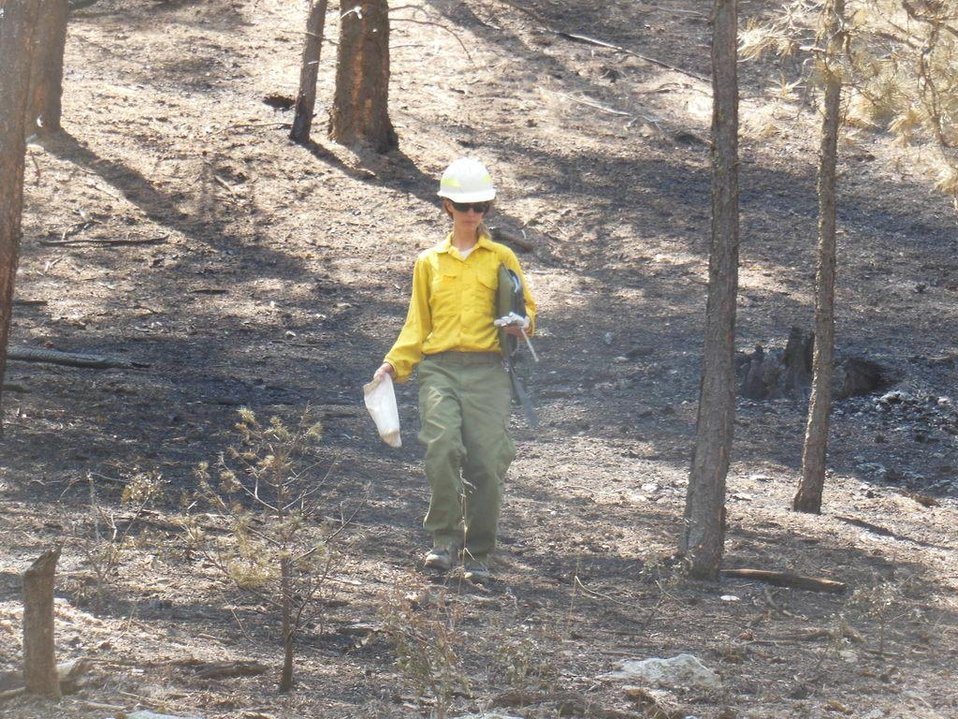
A soil scientist with the Burned Area Emergency Response (BAER) team assesses a burn scar in the Quaking Aspen Creek area of the Silver Fire. The Silver Post Fire response has the Burned Area Emergency Response (BAER) team beginning operations to seed acres of high burn severity and to mulch additional acres. Seeding reduces effects to downstream life, property, and infrastructure by reducing erosion and runoff. Areas of high burn severity are to be seeded with a quick germinating, non-persistent annual cereal barley that would provide rapid ground cover. A small percentage of native perennial species would also be included to give the burned area a jump start in natural recovery, and provide for long-term ground cover. Mulch is the most effective treatment for controlling erosion and runoff, as it provides immediate ground cover. Mulch also assists in stabilizing soil in and around these areas.